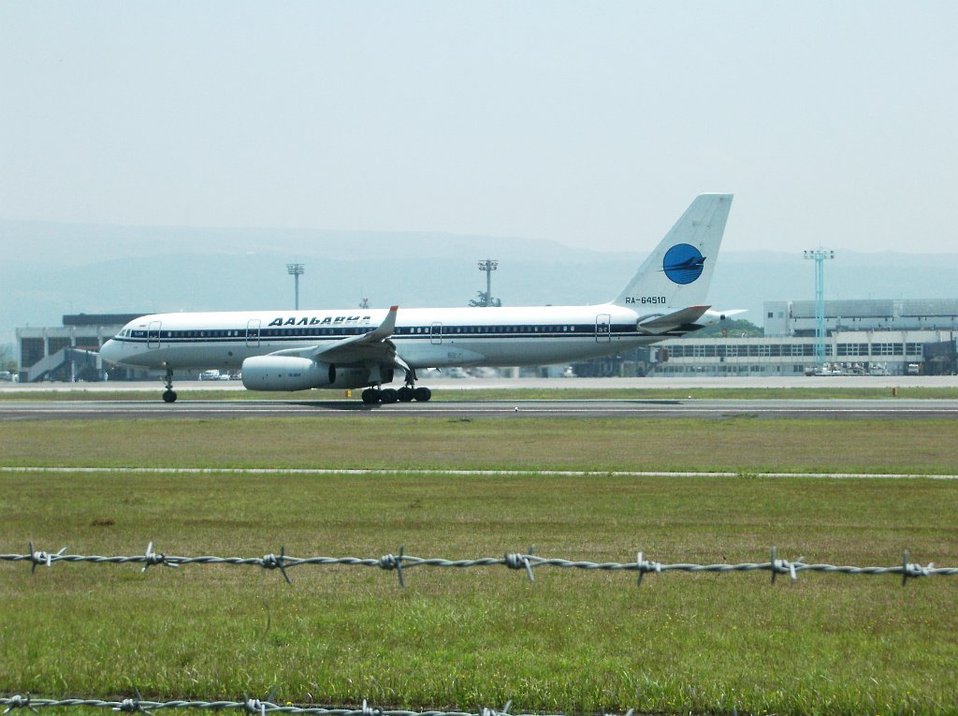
Dalavia Tupolev Tu-214